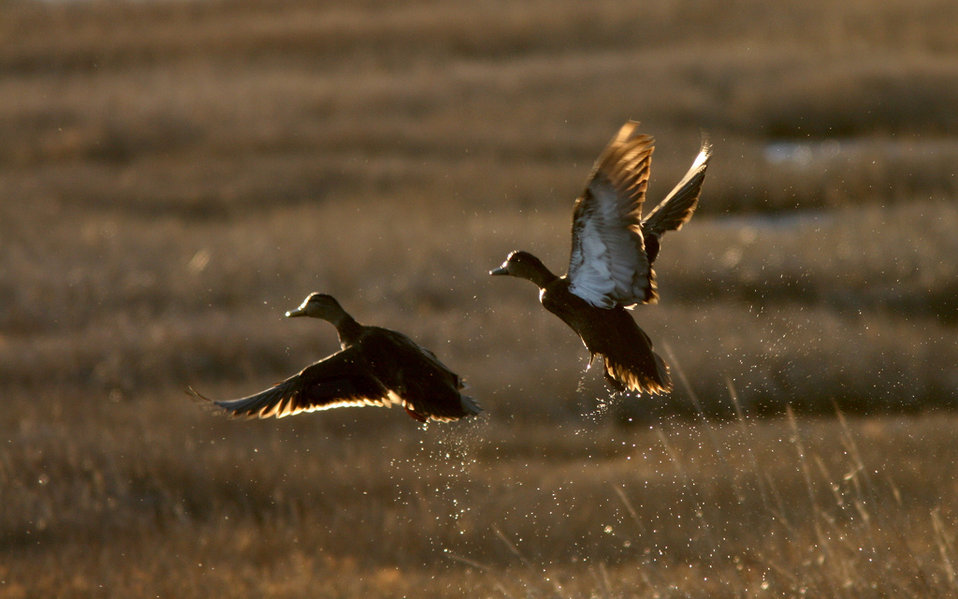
black ducks

Edwin B. Forsythe National Wildlife Refuge, NJ
January 2011